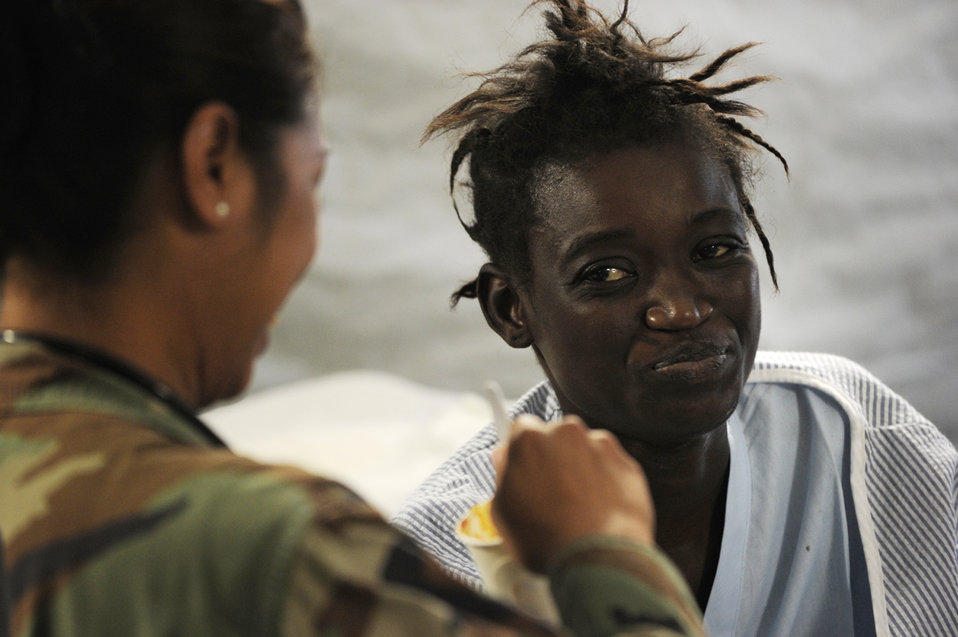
Airmen provide care, compassion to people of Haiti

An American servicemember treats an earthquake survivor Feb. 3, 2010, at an expeditionary medical facility located along the harbor of Port-au-Prince, Haiti. A 7.0-magnatude earthquake struck Haiti Jan. 12, leaving thousands of Haitians displaced and without access to food, water and vital medical care.